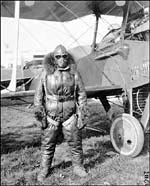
Colonel John A. Macready

EARLY YEARS -- John A. Macready, a Stanford University graduate who enlisted in the Air Service Branch of the Signal Corps in 1917, packed a pile of